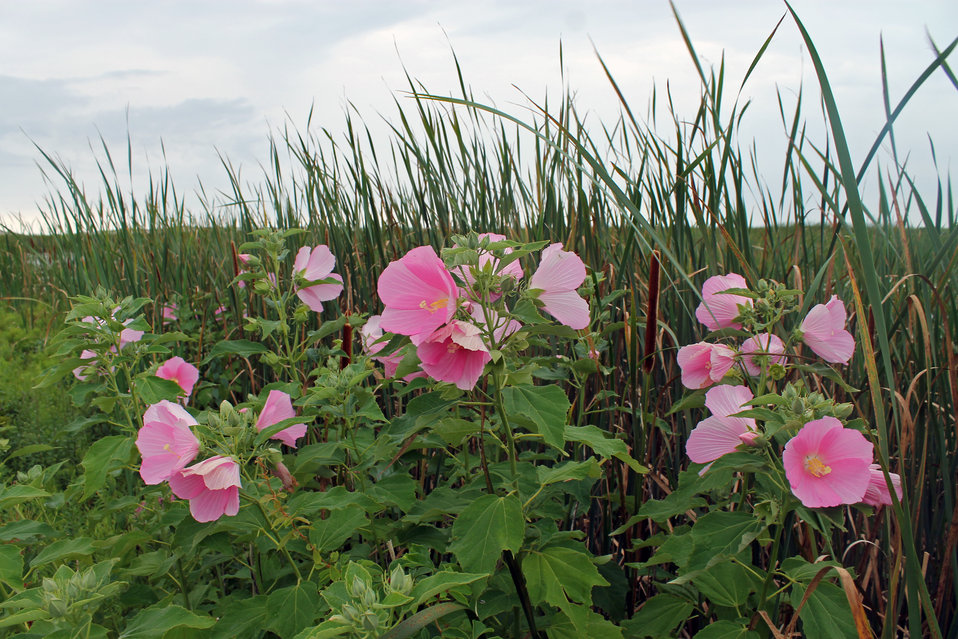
Marsh mallow

Monomoy National Wildlife Refuge, MA.